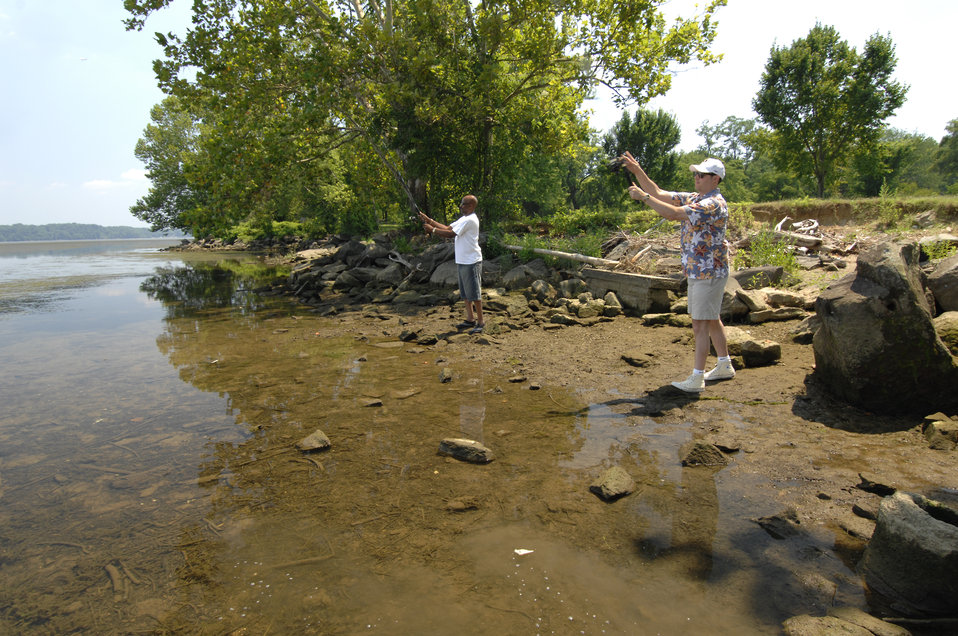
Local residents and visitors enjoy fishing in the Chesapeake Bay, Maryland on July 14, 2008.